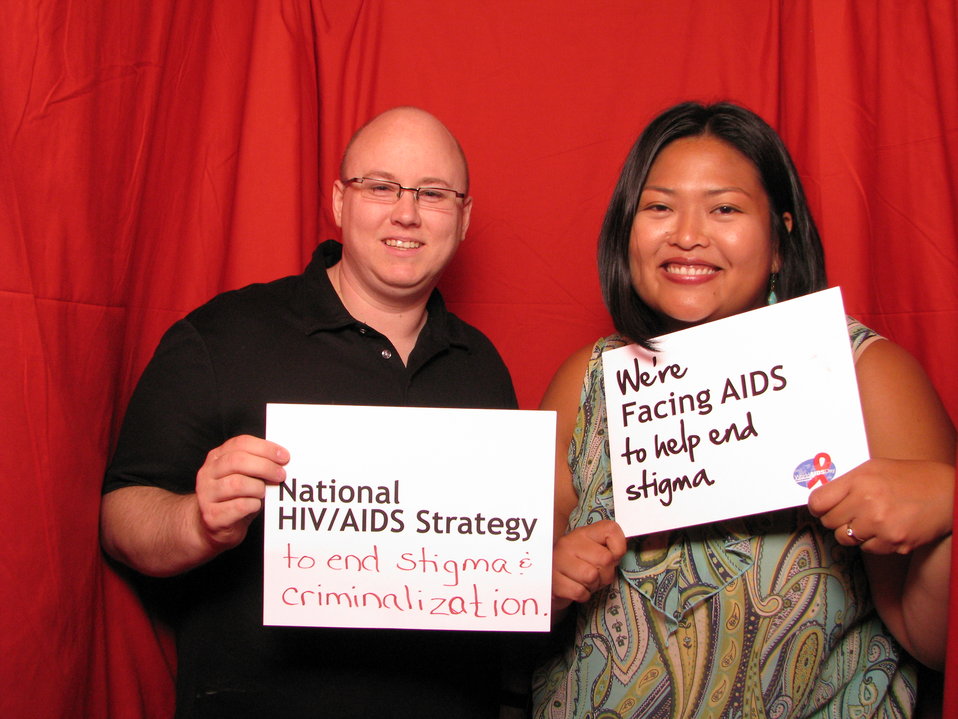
National HIV/AIDS Strategy to End Stigma and Criminalization. We're FACING AIDS to Help End Stigma.

From the AIDS.gov photo booth at the U.S. Conference on AIDS, September 2010 (Orlando, FL).